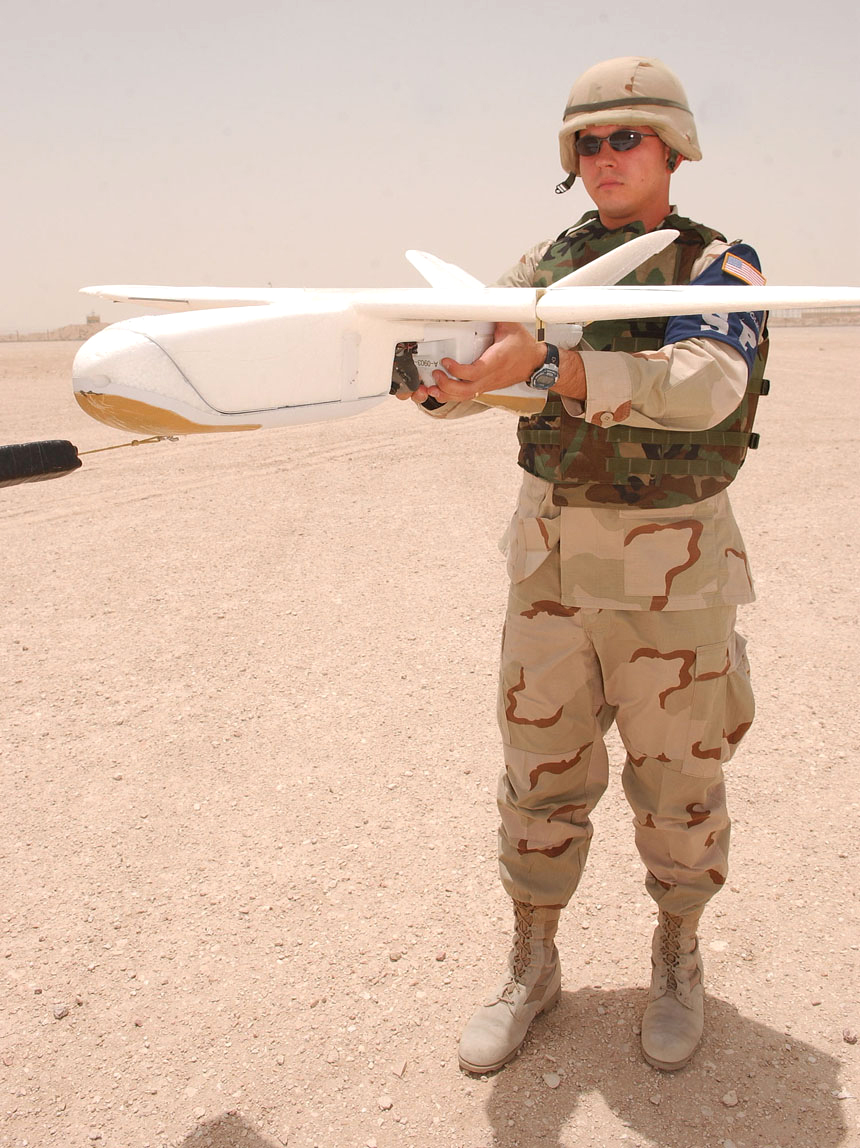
Flying force-multiplier provides eyes forward

SOUTHWEST ASIA -- Staff Sgt. Dustin Heger prepares to launch a force protection airborne surveillance system. The vehicle requires a bungee cord to reach a speed of 50 feet per second at which time the engine engages. Sergeant Heger is assigned to the 379th Expeditionary Security Forces Squadron at a forward-deployed location and is from Elmendorf Air Force Base, Alaska.